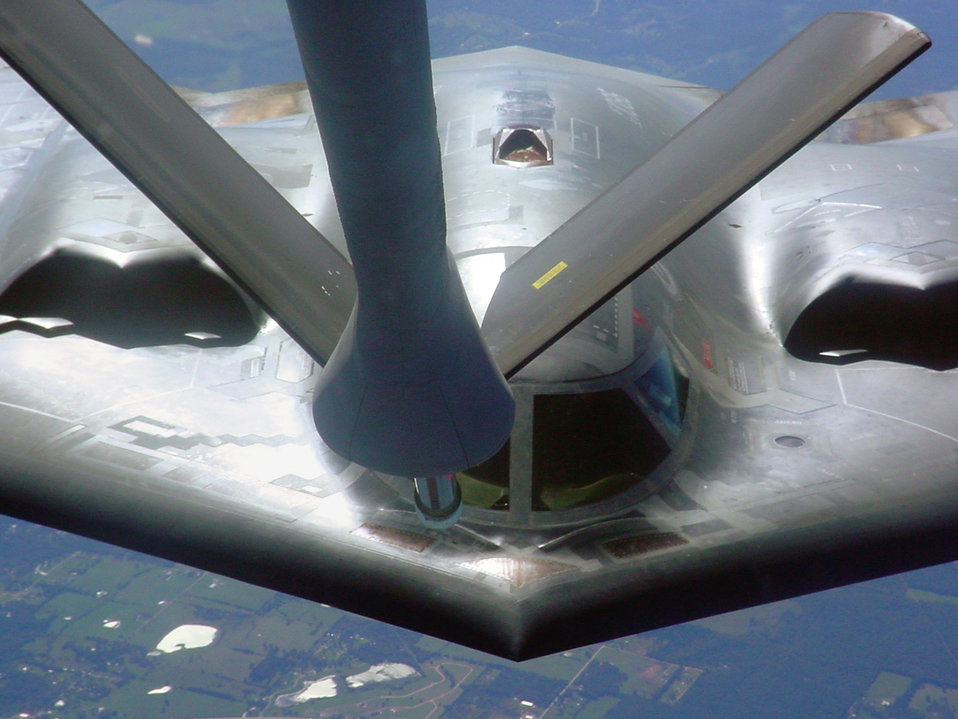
Time to fill up

OVER THE CENTRAL UNITED STATES -- A B-2 Spirit crew from the 509th Bomb Wing at Whiteman Air Force Base, Mo., prepares for refueling by a KC-135R Stratotanker from the 319th Air Refueling Wing at Grand Forks AFB, N.D. The air refueling effort was part of a training mission.